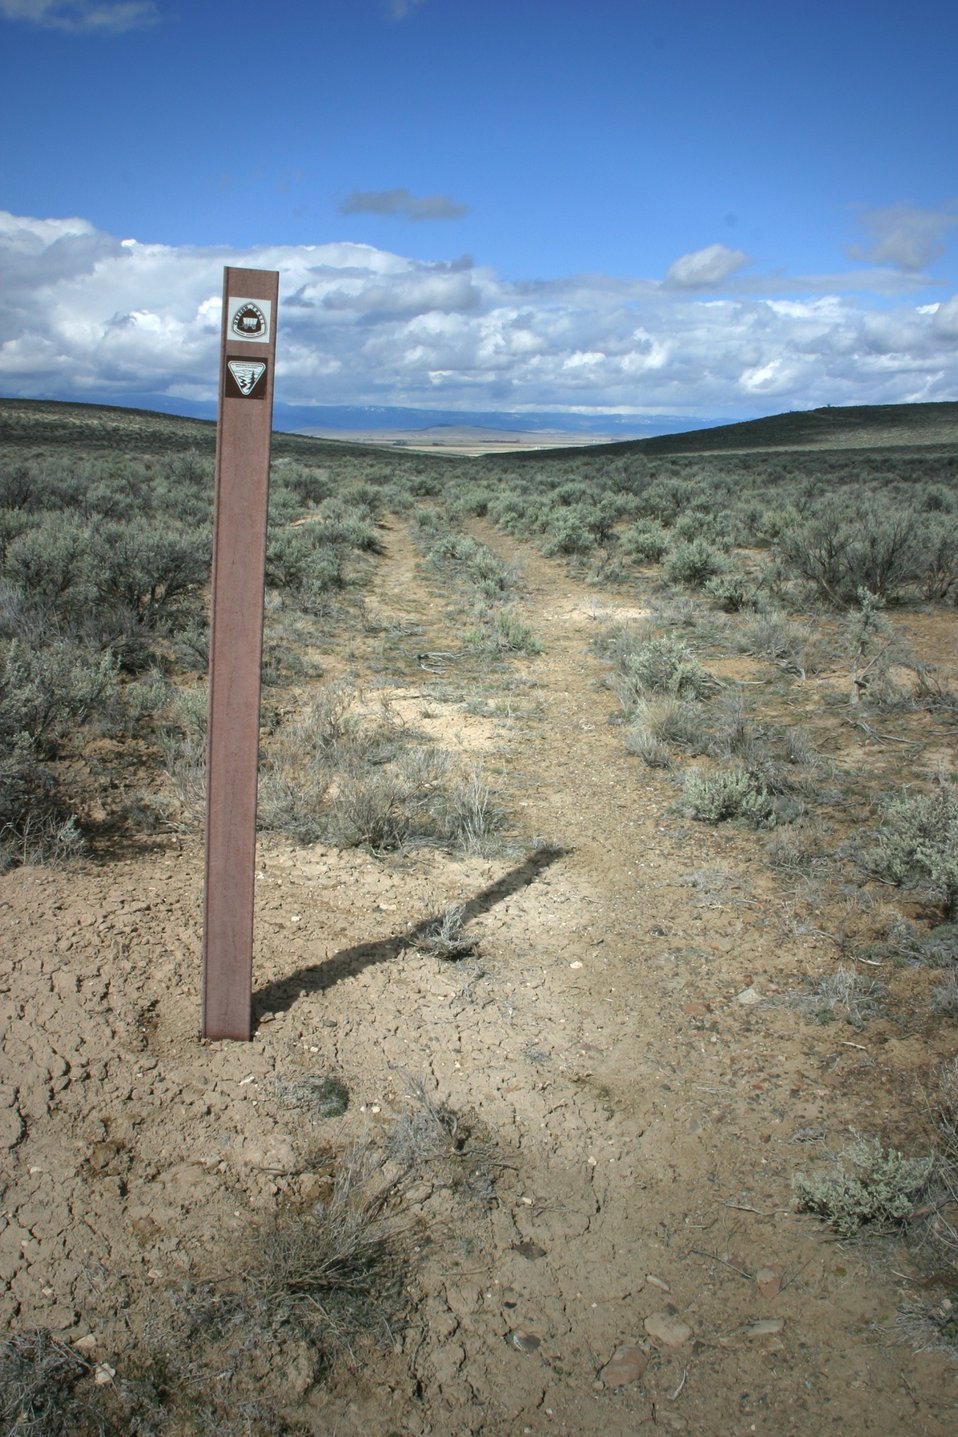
Oregon Trail ruts below the National Historic Oregon Trail Interpretive Center.